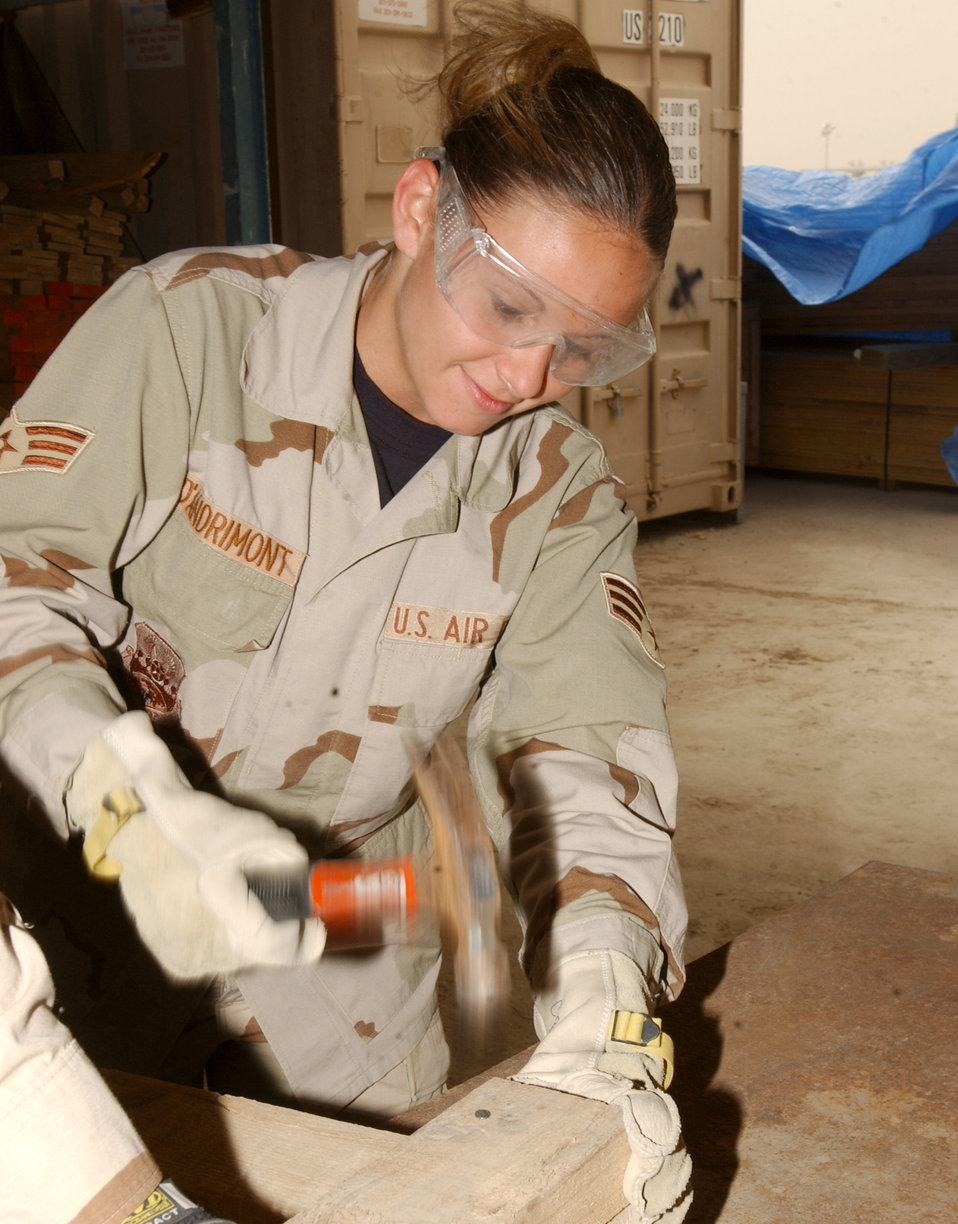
Chip off the block

TALLIL AIR BASE, Iraq -- Senior Airman Cassandra d'Andrimont hammers pieces of wood together for crates here April 16 in support of Operation Iraqi Freedom. Airman d'Andrimont is with the 407th Expeditionary Logistics Readiness Squadron.